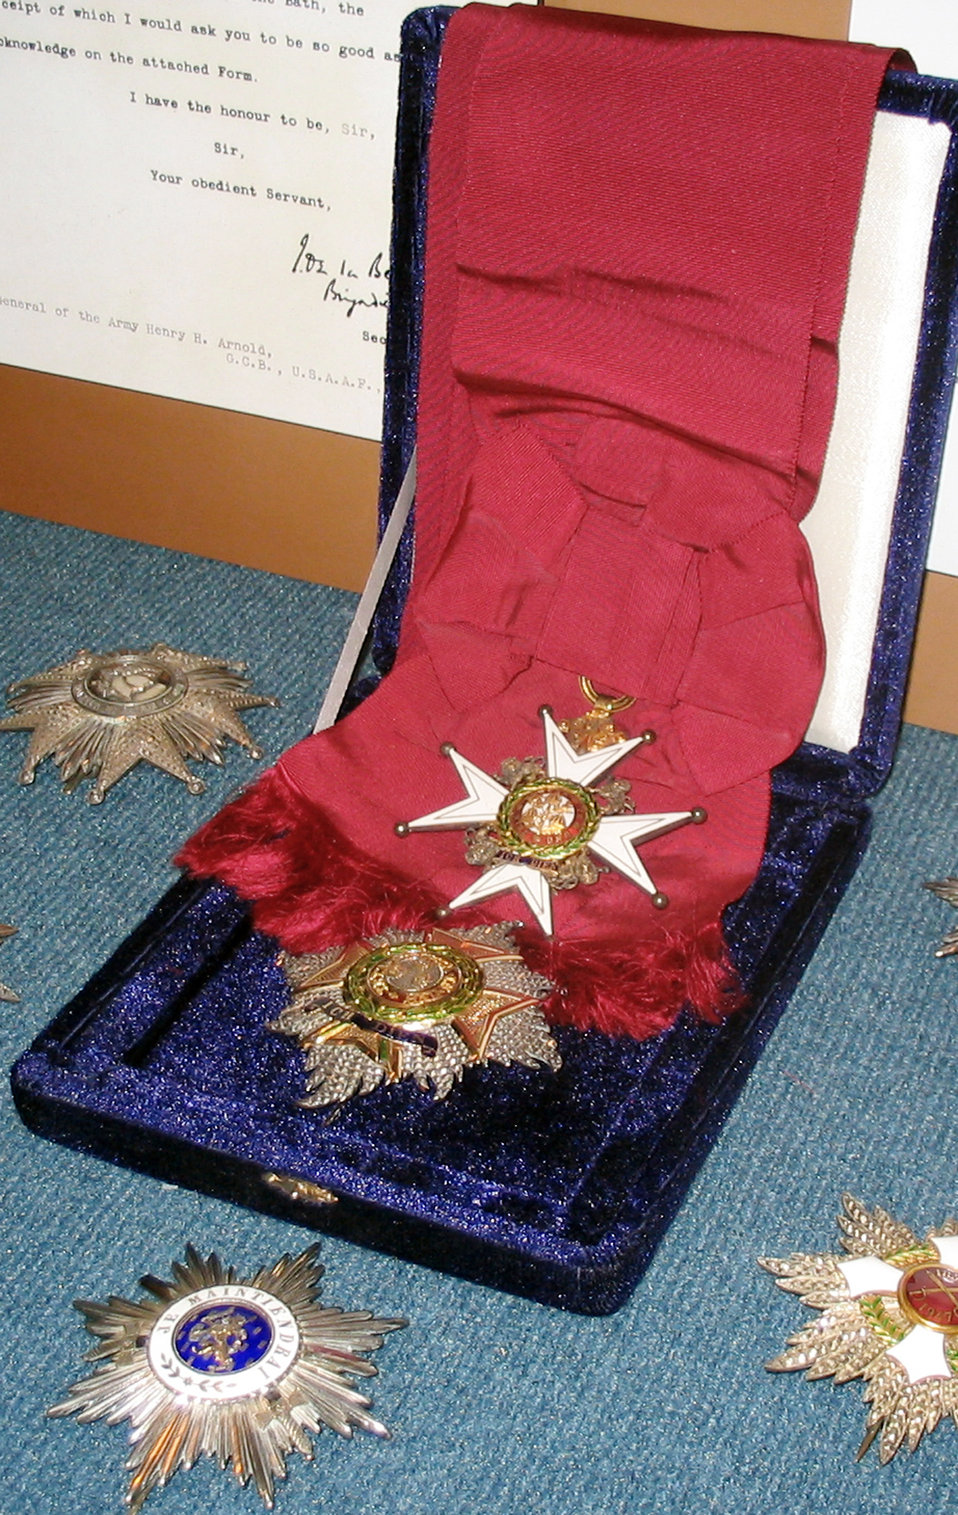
Historical exhibit showcases 'Father of the Air Force'

General Arnold's